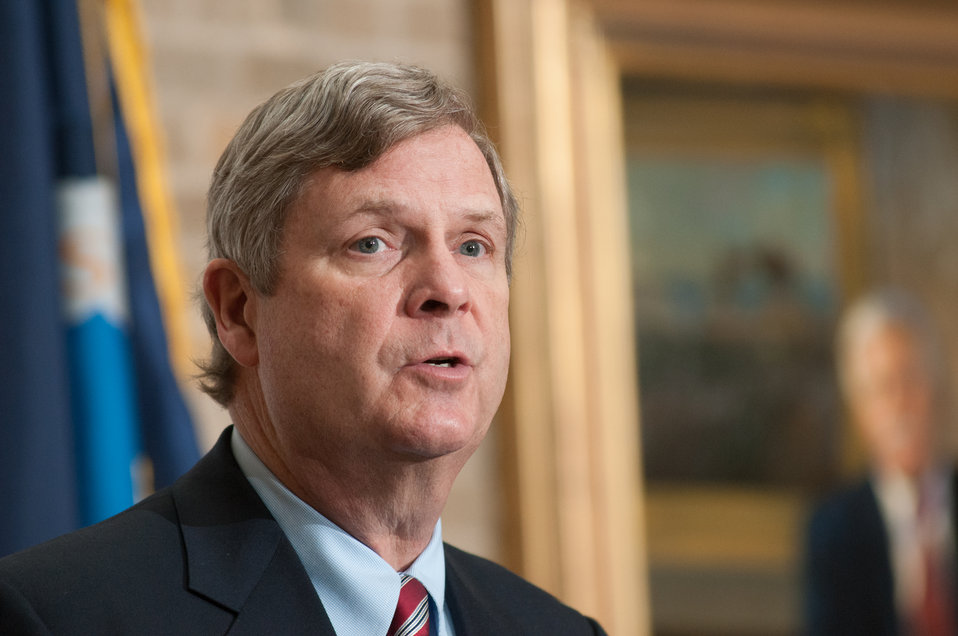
Agriculture Secretary Tom Vilsack speaks to dairy producers, Dairy Management, Inc., (DMI) and other stakeholders in the dairy industry at a luncheon at the Whitten Building Patio, in Washington, D.C. on Tuesday, Feb. 26, 2013. Dairy Management, Inc. (DMI) Chief Executive Officer Tom Gallagher presented Secretary Vilsack and the U.S. Department of Agriculture (USDA) team with a National Football League Fuel Up to Play 60 helmet for the work that USDA has done in support of the dairy industry.